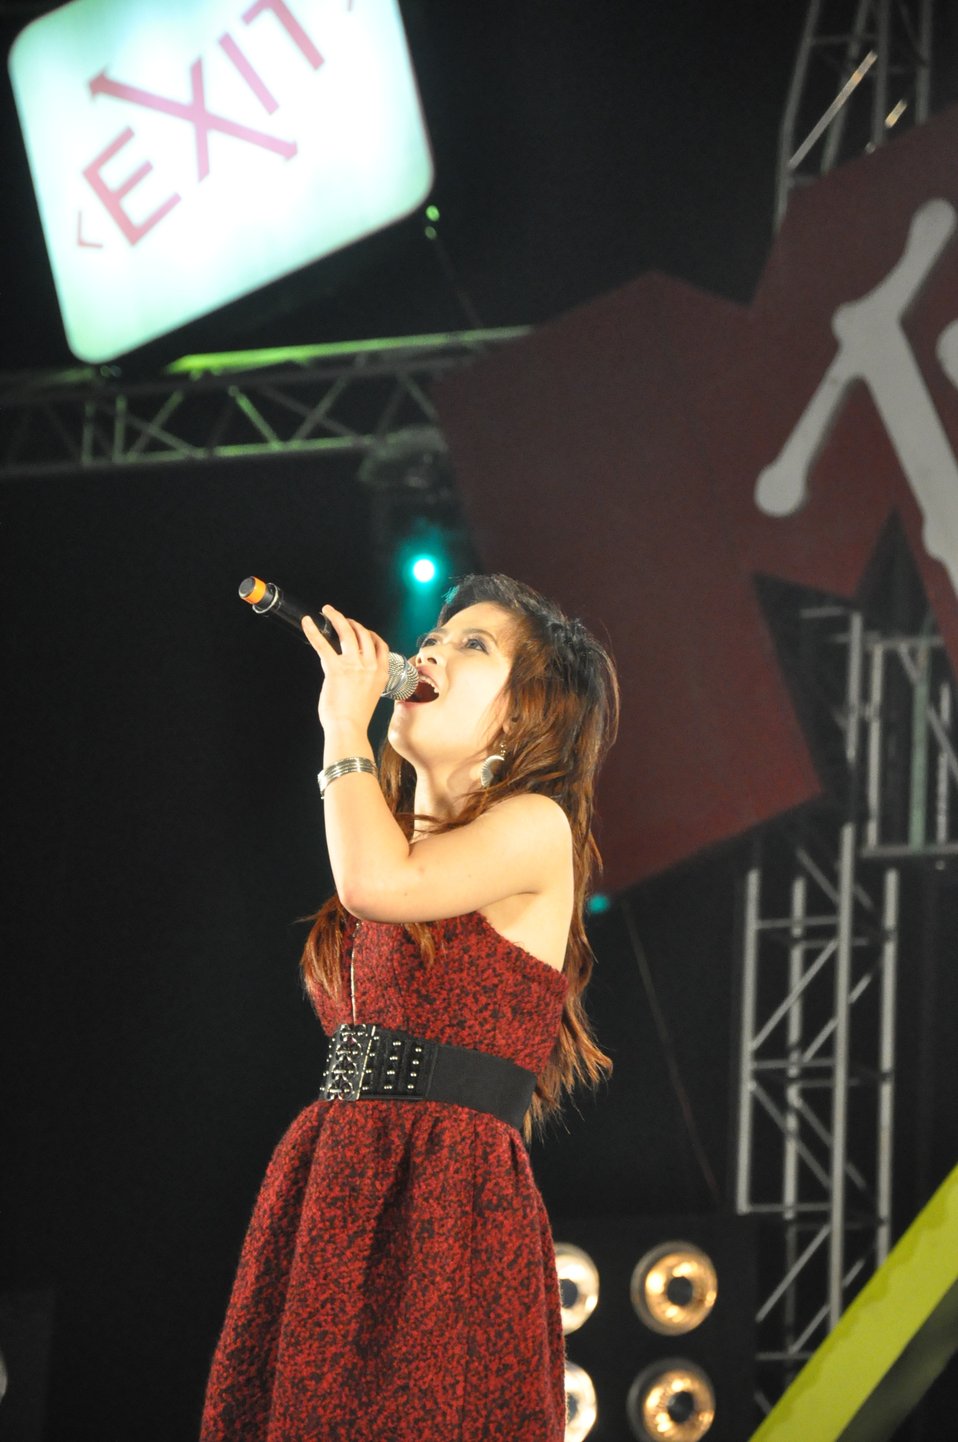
USAID and MTVEXIT Concert Halong Bay

Halong Bay Concert, April 4, 2010